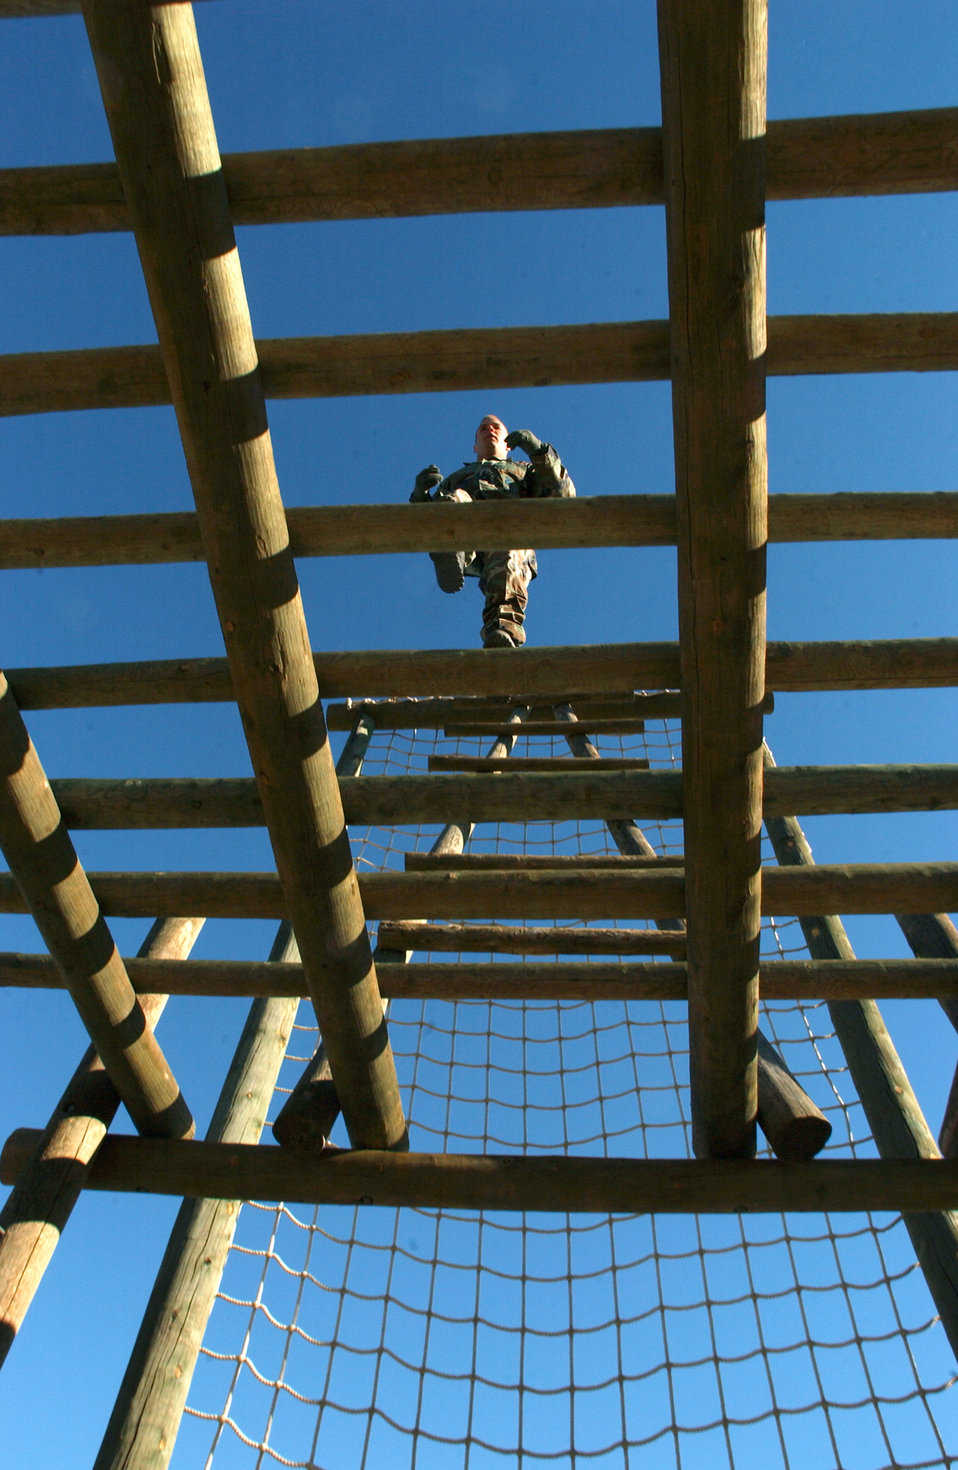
Defender Challenge 2004

FORT HUACHUCA, Ariz. -- Senior Airman Chris Clawson runs across beams on the first training obstacle named